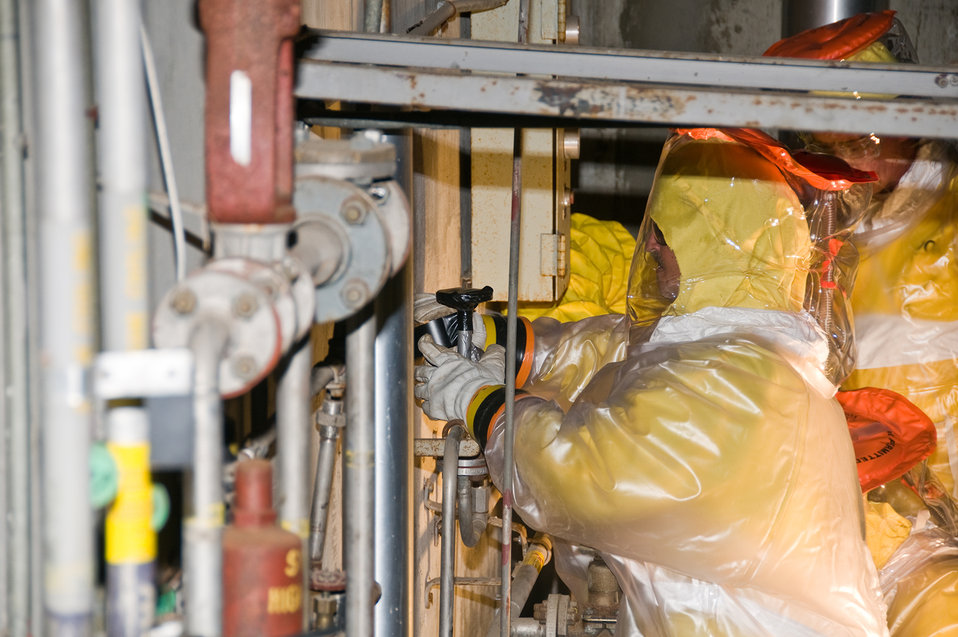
SRS R-Reactor Recovery Act work